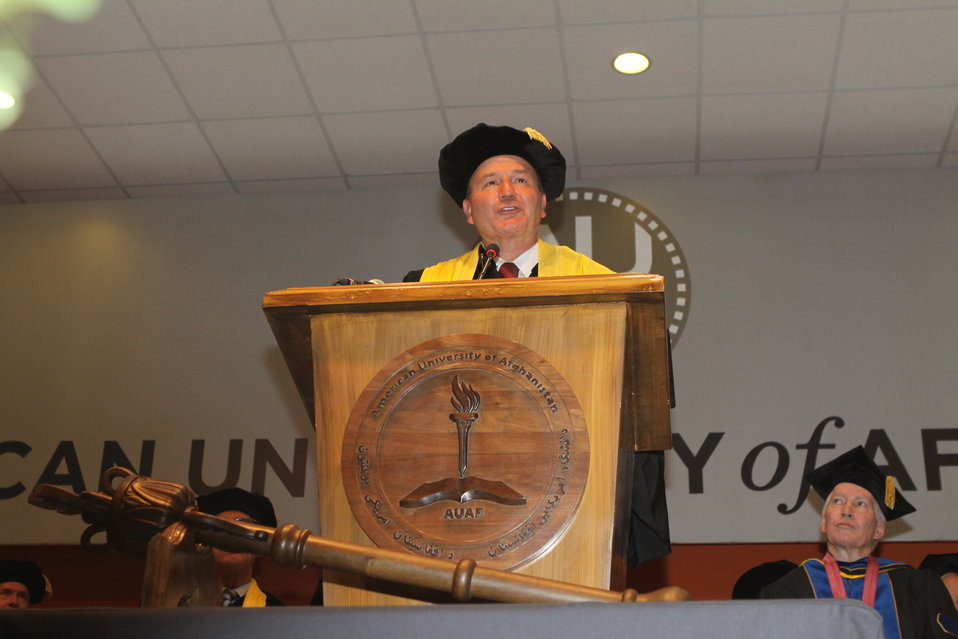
100526 AUAF Graduation 217